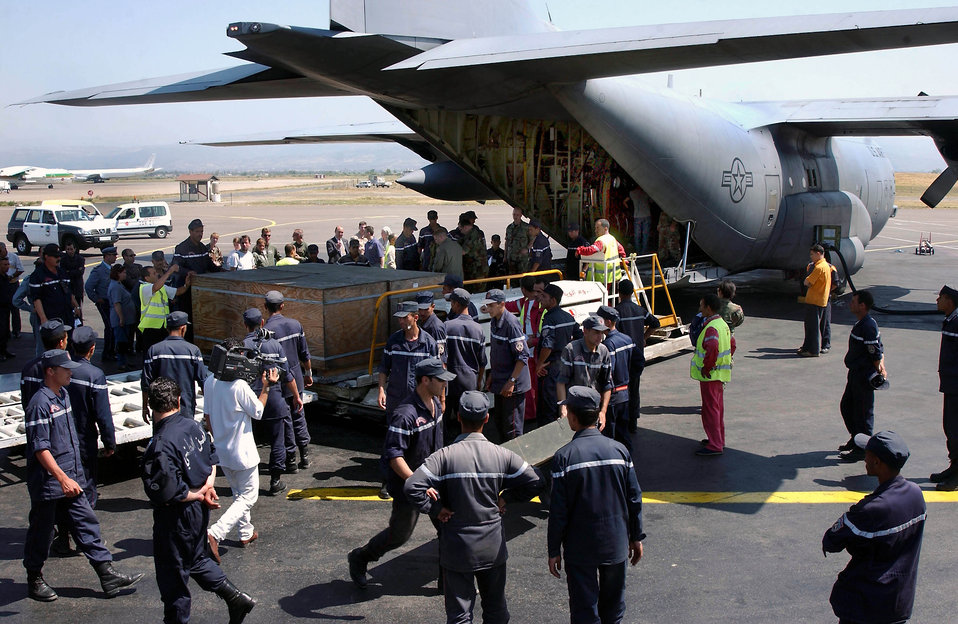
Quake relief

ALGIERS, Algeria -- Algerian workers unload 15,000 pounds of medical supplies, beds and tents for earthquake victims here. Reservists from the 773rd Airlift Squadron at Youngston, Ohio, and deployed to the 86th Airlift Wing at Ramstein Air Base, Germany, delivered the goods May 30.